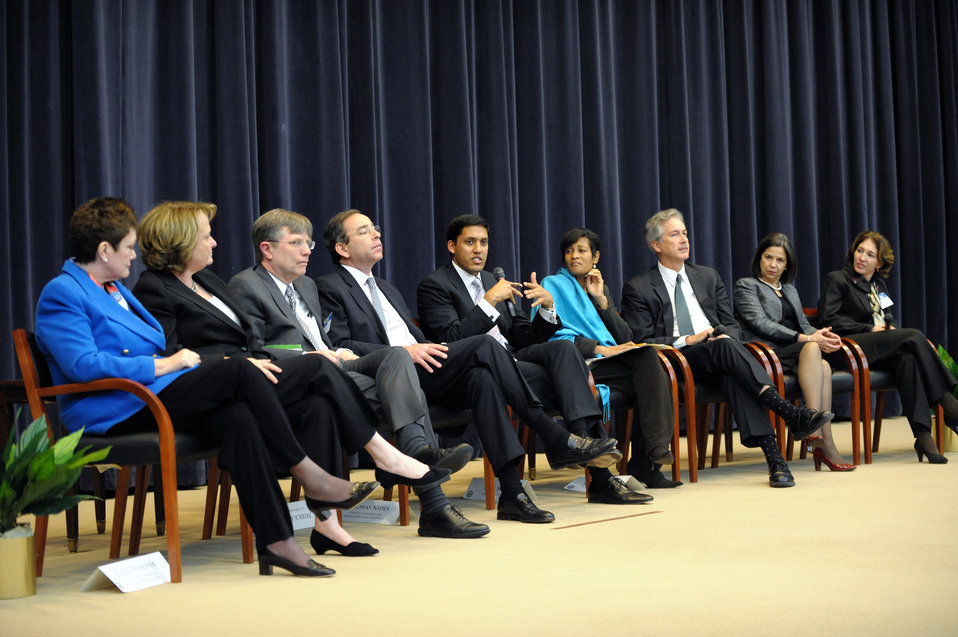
USAID Administrator Shah Participates in the Town Hall

USAID Administrator Shah, center, participates in the in the Town Hall at the 2011 Global Chiefs of Mission Conference at the U.S. Department of State in Washington, D.C., on February 3, 2011. From left to right, Under Secretary of State or Arms Control and International Security Ellen Tauscher, Under Secretary of State for Public Diplomacy and Public Affairs Judith McHale, Under Secretary of State for Management Patrick Kennedy, Deputy Secretary of State for Management and Resources Thomas R. Nides, USAID Administrator Rajiv Shah, Counselor Cheryl Mills, Under Secretary of State for Political Affairs William J. Burns, Under Secretary of State for Democracy and Global Affairs Maria Otero, and Policy Planning Director Dr. Anne Slaughter.